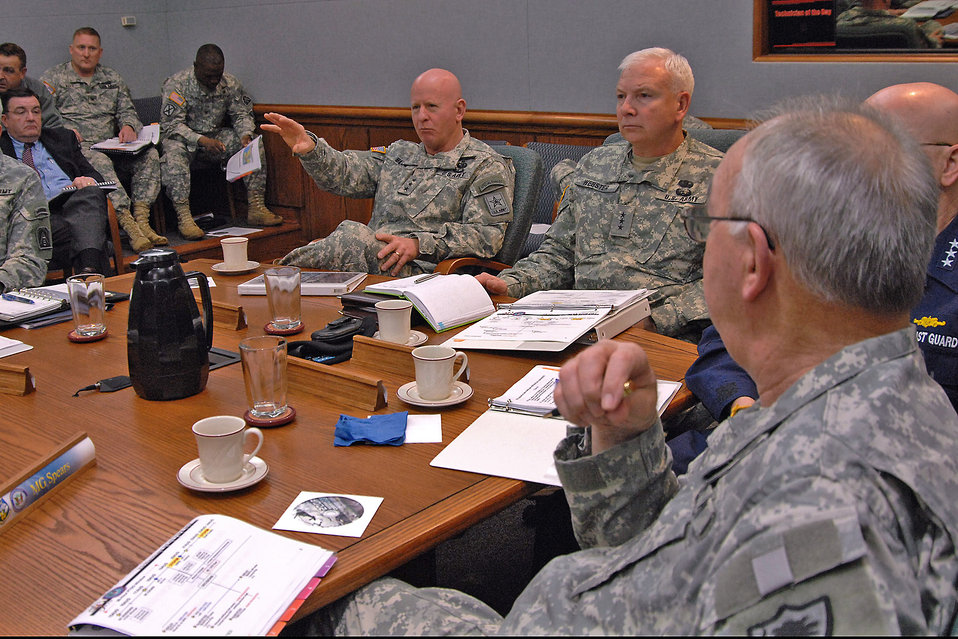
Hurricane preparation conference

Army Lt. Gen. H Steven Blum (left), chief of the National Guard Bureau, and Lt. Gen. William Webster (center), deputy commander of U.S. Northern Command, discuss the 2007 military response to Hurricane Dean March 14 during USNORTHCOM's two-day Hurricane Preparation Conference at Peterson Air Force Base, Colo.. Adjutants general from hurricane-prone states and territories participated in the third annual conference, along with representatives from the Department of Homeland Security, FEMA, Navy, Coast Guard, Army, Air Force and Canada Command.